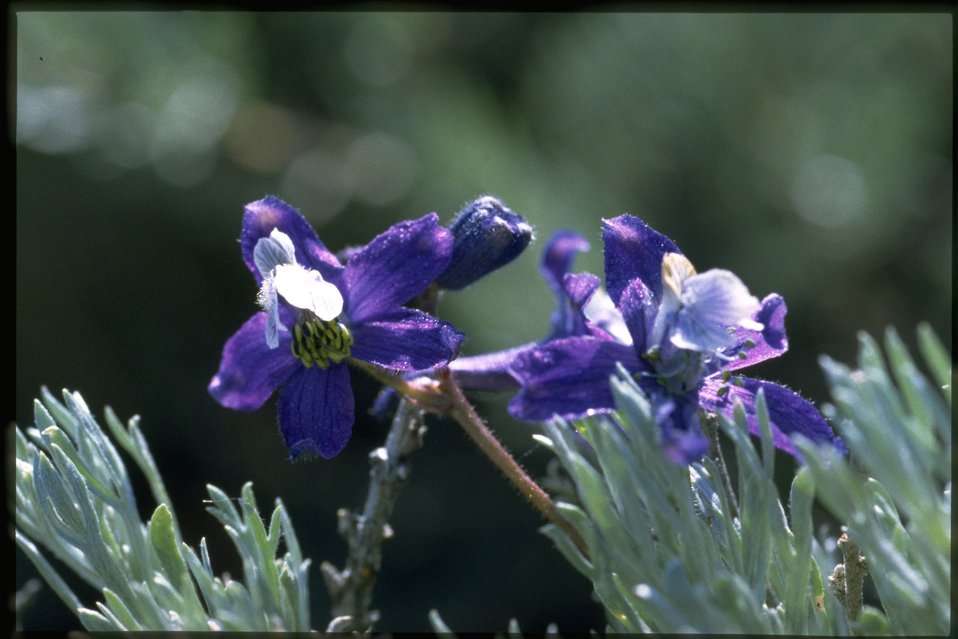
Closeup shot of Larkspur wildflowers (Delphinium Sp.).